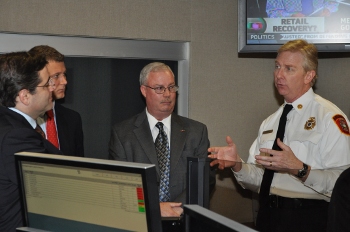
Next gen overview

Next Generation 9-1-1; Arlington, VA. November 23, 2010